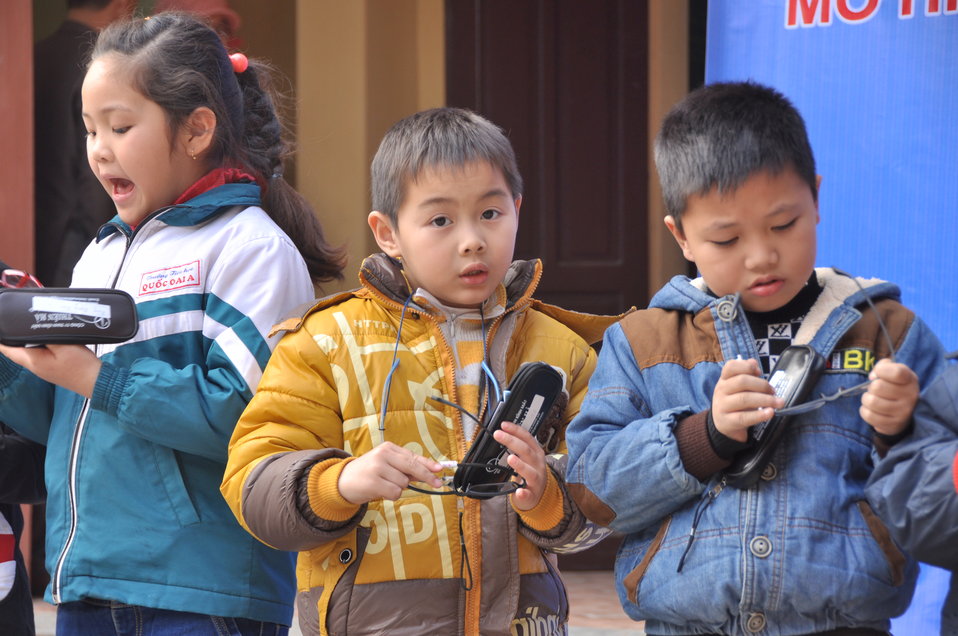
USAID supports distribution of eyeglasses to pupils and teachers in Quoc Oai, Hanoi.

Kieu Phu Junior Secondary School, Quoc Hoai, Hanoi, December 23, 2013.